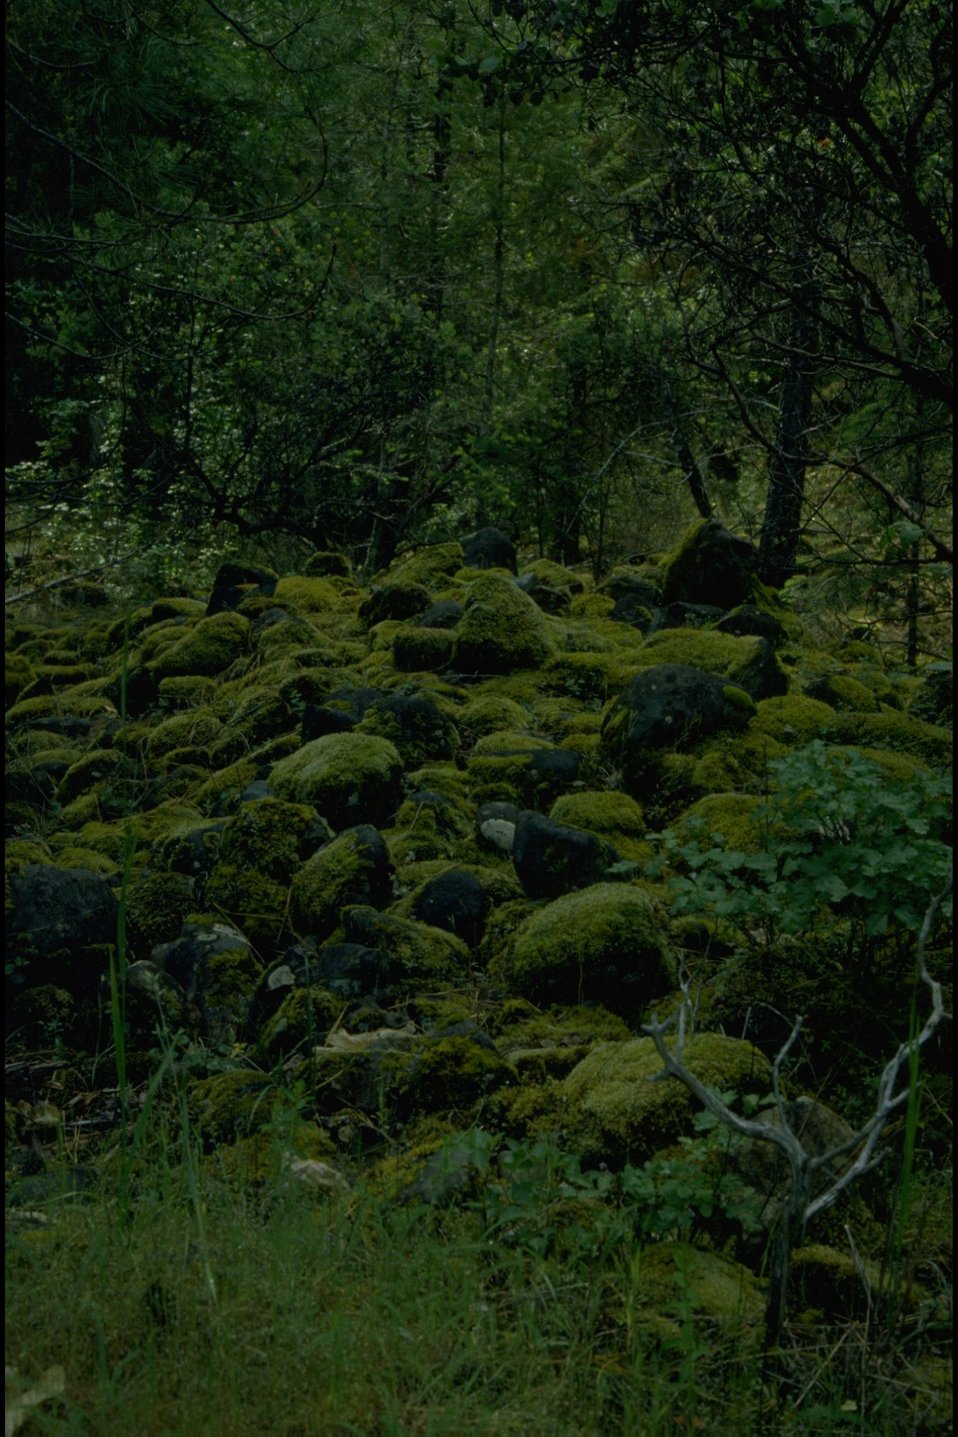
Mossy rocks in a creek bed.